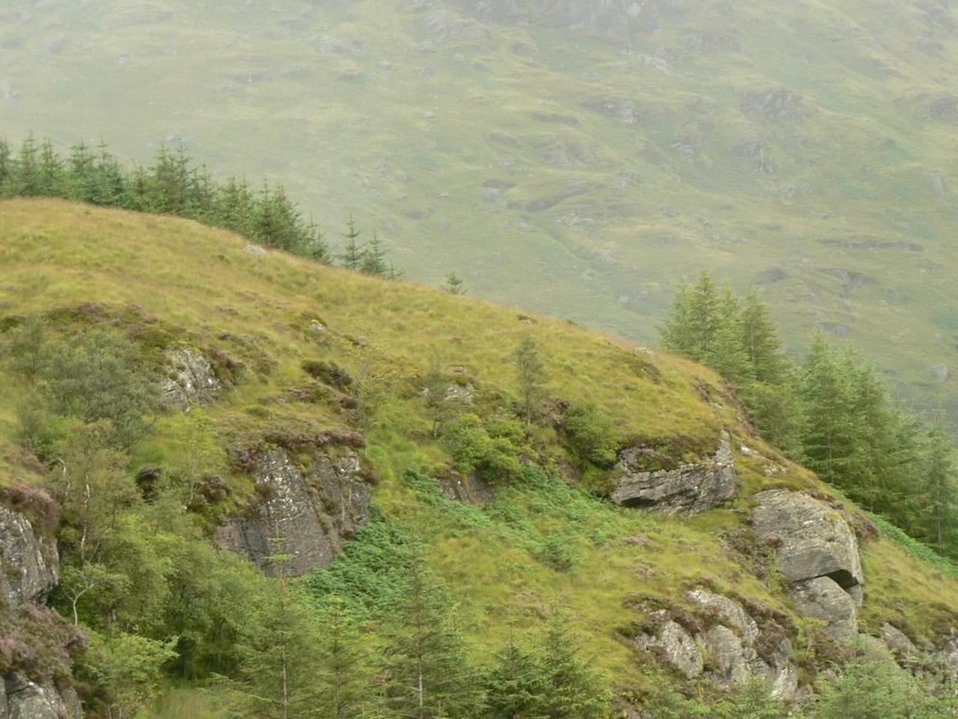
English:
Image title: Beautiful Scottish countryside Image from Public domain images website, http://www.public-domain-image.com/full-image/nature-landscapes-public-domain-images-pictures/hill-public-domain-images-pictures/beautiful-scottish-countryside.jpg.html